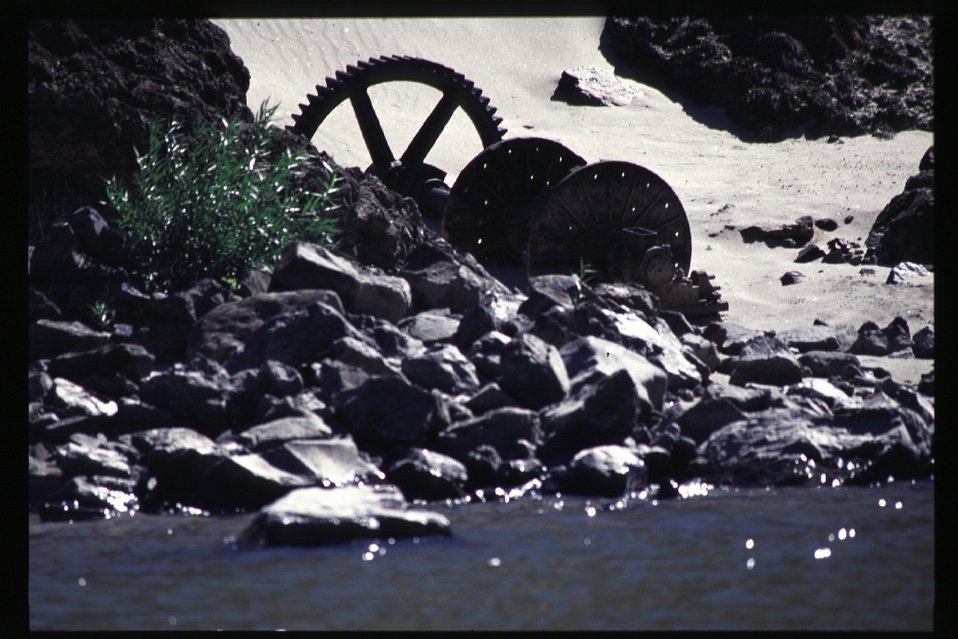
Old mining equipment Lower Salmon River Cottonwood Field Office UCSC Upper Columbia Salmon Clearwater District